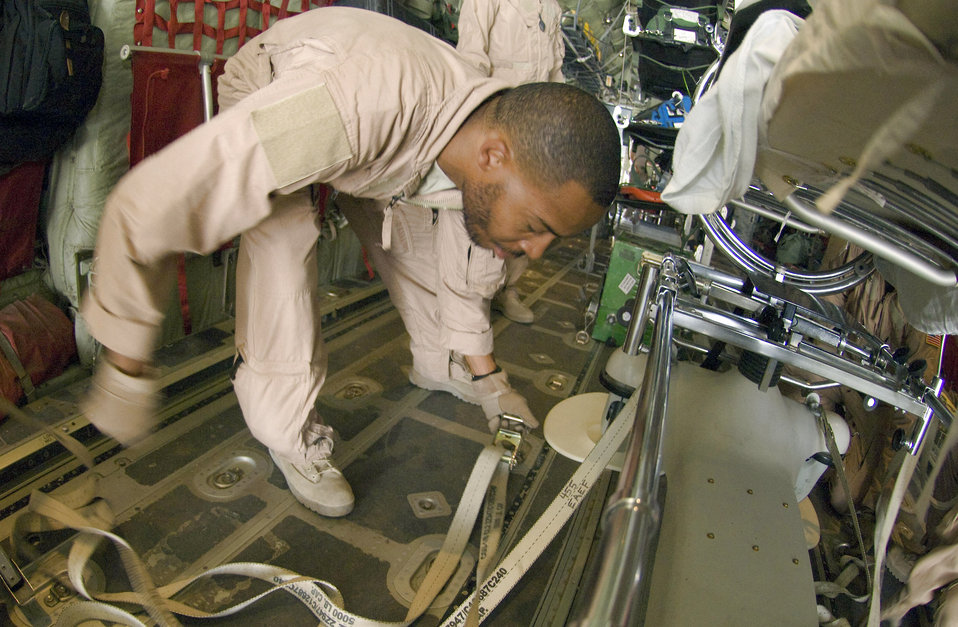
Airframes transform to 'aerovac'

Staff Sgt. Elliot Dozier secures tie-downs to a stryker frame on a C-130 Hercules July 8 at Bagram Air Field, Afghanistan. The stretcher was the final piece of equipment needed to convert the C-130 for aeromedical evacuation operations. Sergeant Elliot is deployed to the 455th Expeditionary Aeromedical Evacuation Flight from the 375th Aeromedical Evacuation Squadron at Scott Air Force Base, Ill.